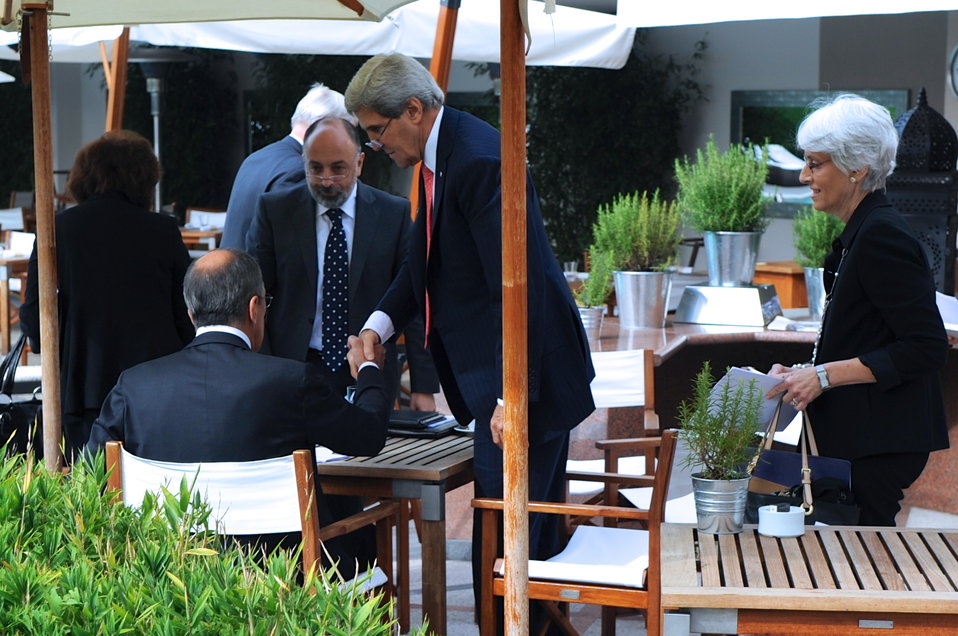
Secretary Kerry and Russian Foreign Minister Lavrov Shake Hands After Reaching an Agreement on Syria

U.S. Secretary of State John Kerry shakes hands with his Russian counterpart, Foreign Minister Sergey Lavrov, after they reached an agreement to eliminate Syrian chemical weapons in Geneva, Switzerland, on September 14, 2013.